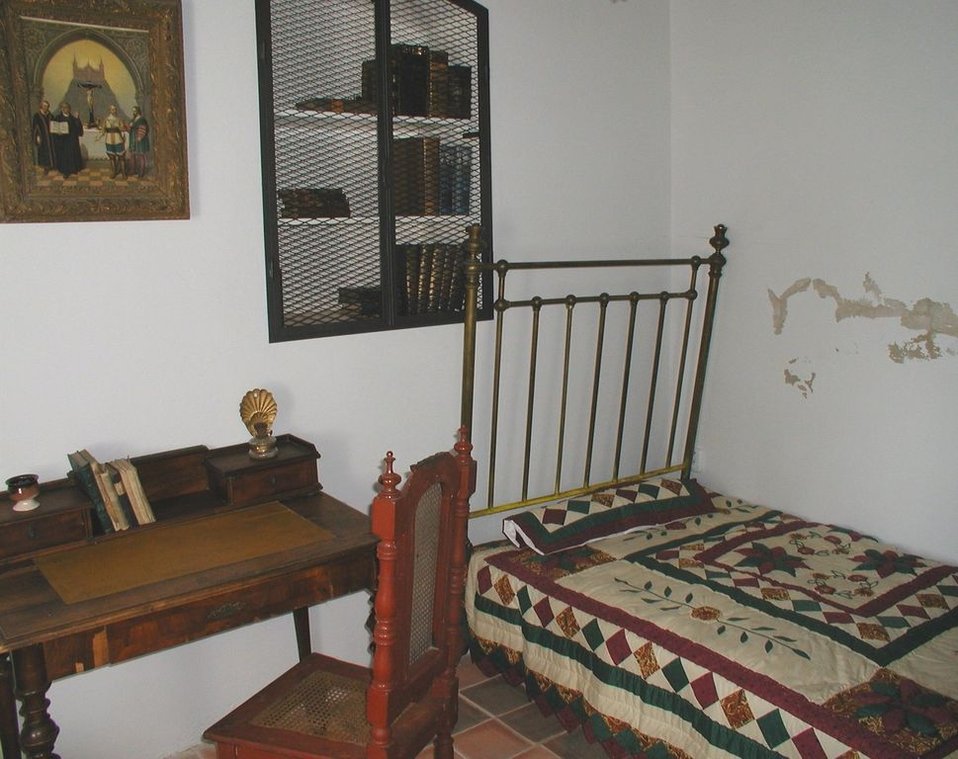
Palackého izba Licencovanie: Autorom fotografie je Imrich Šimonek z Dubníka sk:Kategória:Presunúť na Commons